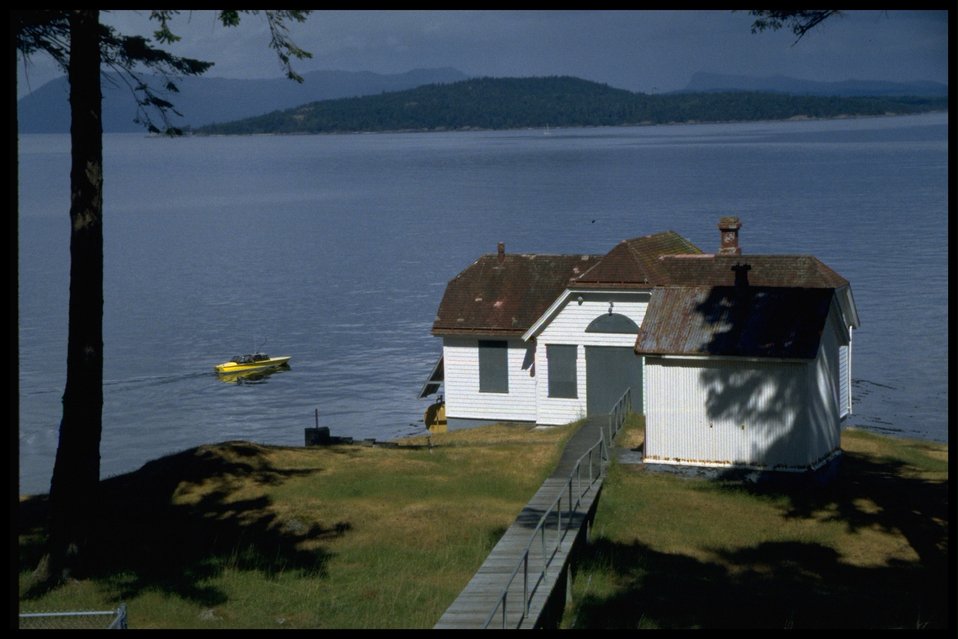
Turn Point lighthouse with water taxi waiting in the background.